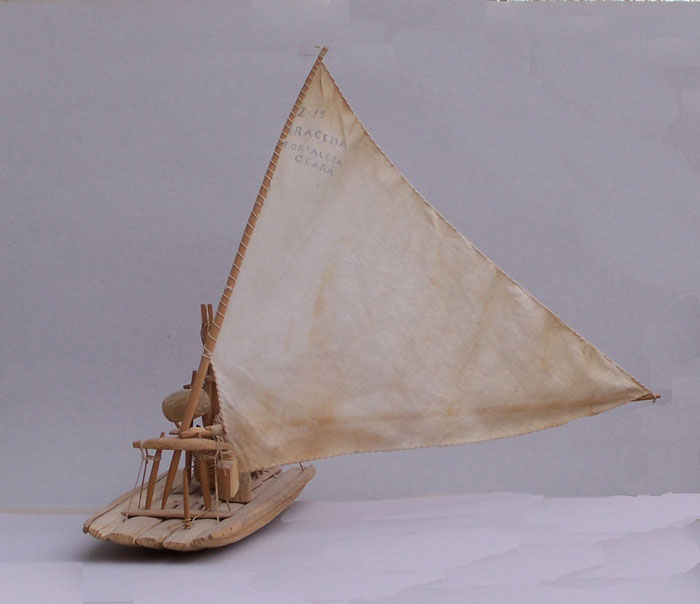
modell of a Jaganda, made by Airton Caetano da Silva, Fortaleza CE, Brasil Jangadas: A Brazilian Fishing Craft